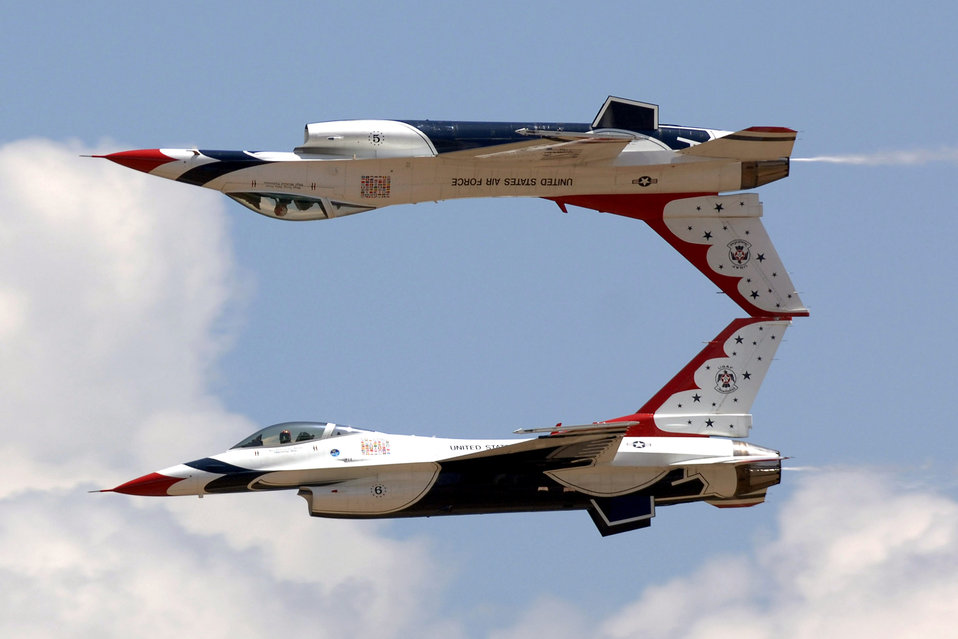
From cadet to lieutenant

The U.S. Air Force Thunderbirds perform an airshow after the 2007 U.S. Air Force Academy Graduation Ceremony May 30 in Colorado. The ceremony marks the culmination of four years at the academy and their transition from cadet to the Air Force's newest second lieutenants.